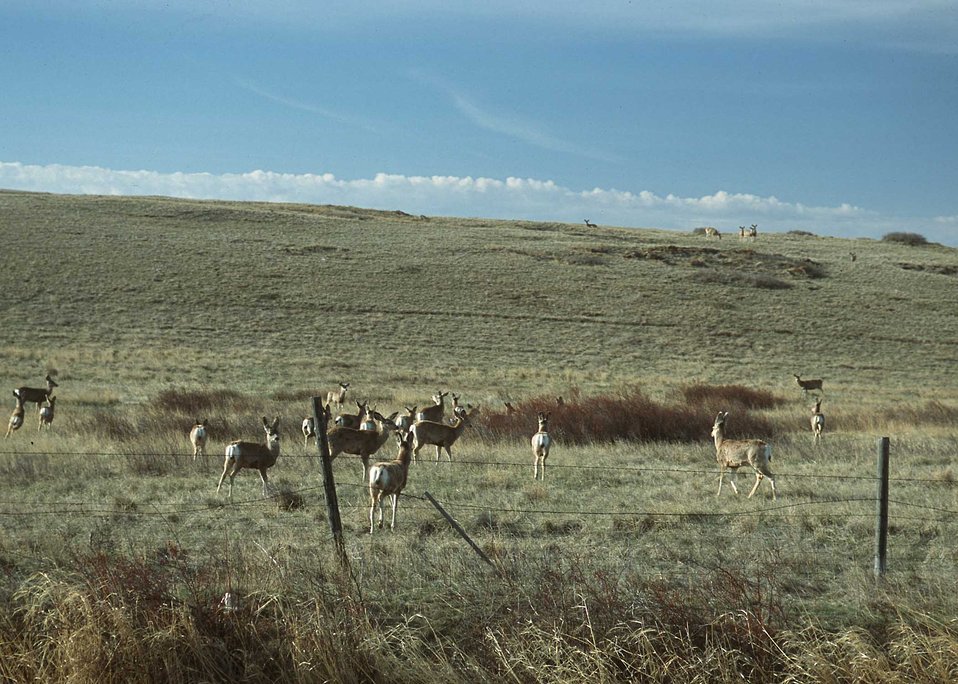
Deer utilizing rangelands in northcentral Montana.